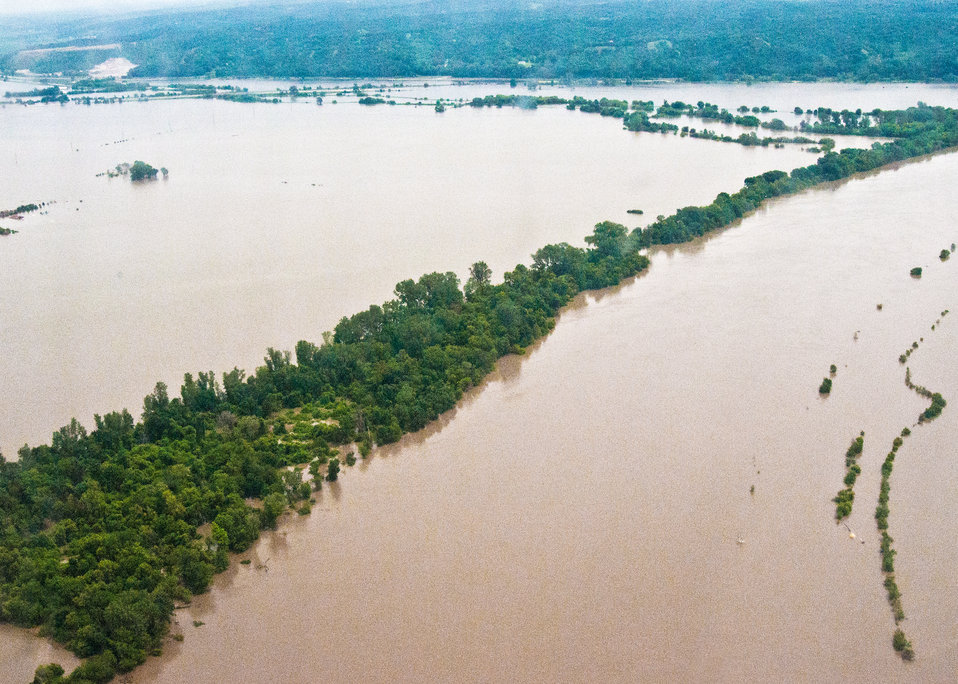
The Missouri river flooded hundreds of acres in Nebraska and Iowa. Agriculture Secretary Tom Vilsack visited the area on Friday, June 17, 2011, and spoke to agriculture producers and community leaders. The goal of the meetings was to get a firsthand look and provide that information back to Washington necessary to better deliver disaster programs expeditiously to effectively respond to this disaster. The United States Department of Agriculture agencies have programs to assist producers as they assess recovery efforts to assist with recovery in rural areas reeling from a natural disaster. USDA and the entire federal family have been working with state and local officials to provide relief to residents, farmers, ranchers and businesses.